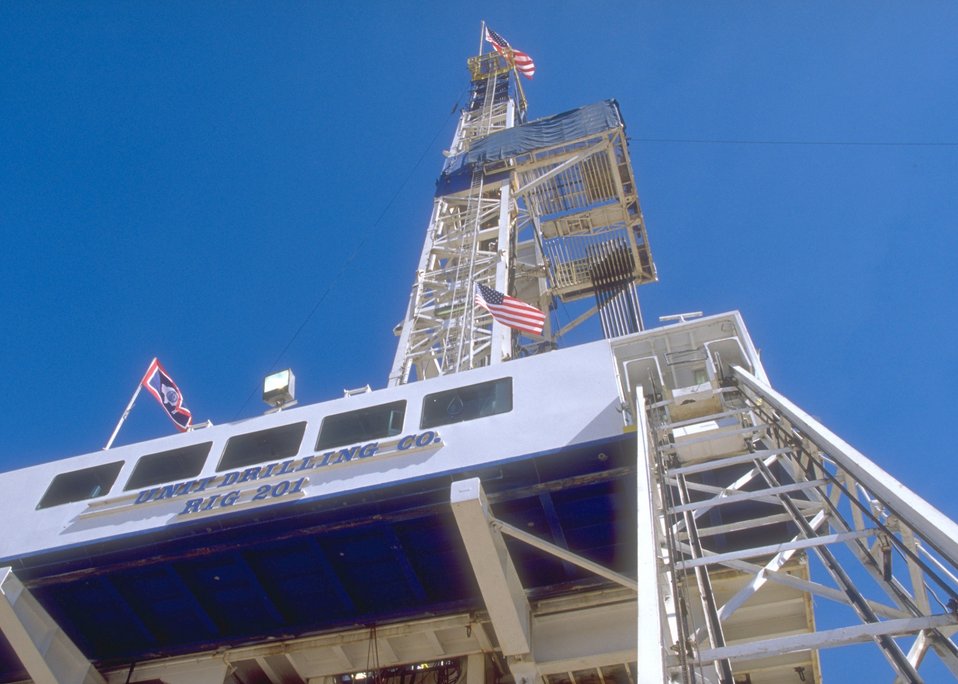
Burlington Northern deep well rig, Casper Field Office.